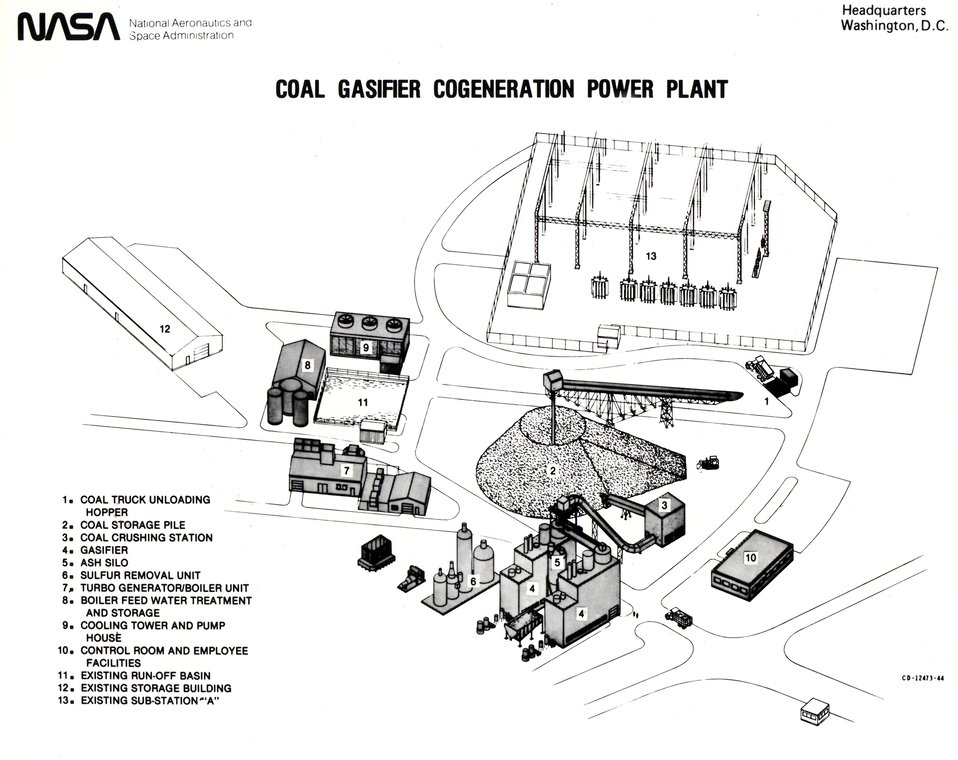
This is the preliminary design for the 20 megawatt size power plant NASA Lewis Research Center intends to build at its 350 acre complex in Cleveland, Ohio.